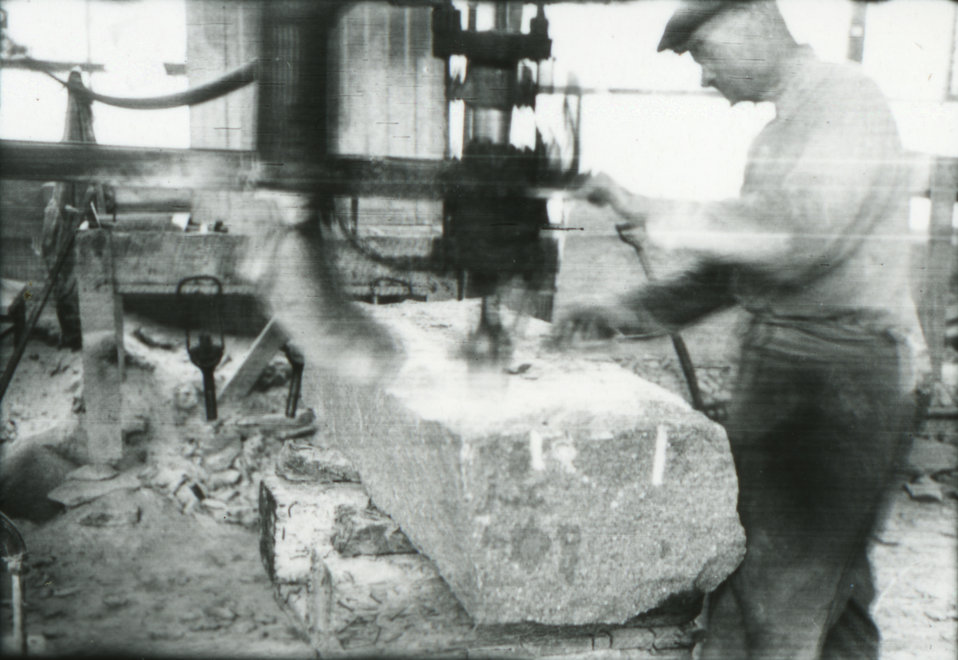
This October 1947 photograph was provided by the Center for Disease Control's (CDC), National Institute for Occupational Safety and Health (NIOSH). The image depicted a stonecutter who was shaping a granite gravestone by using a powered drill sander inside a Kansas workshop. This man was not wearing any barrier to dust that could have been inhaled, as a filtered breathing apparatus, or any eye protection against airborne, or splintered particulates. To the left of the sanding tool was a 'jury-rigged' ventilator, which had been curved in order to catch dust particles escaping from the cutting surface. Workers like this mason, can be exposed to potential respiratory health hazards as well as other physical injuries when working in the stone cutting and quarrying industries.